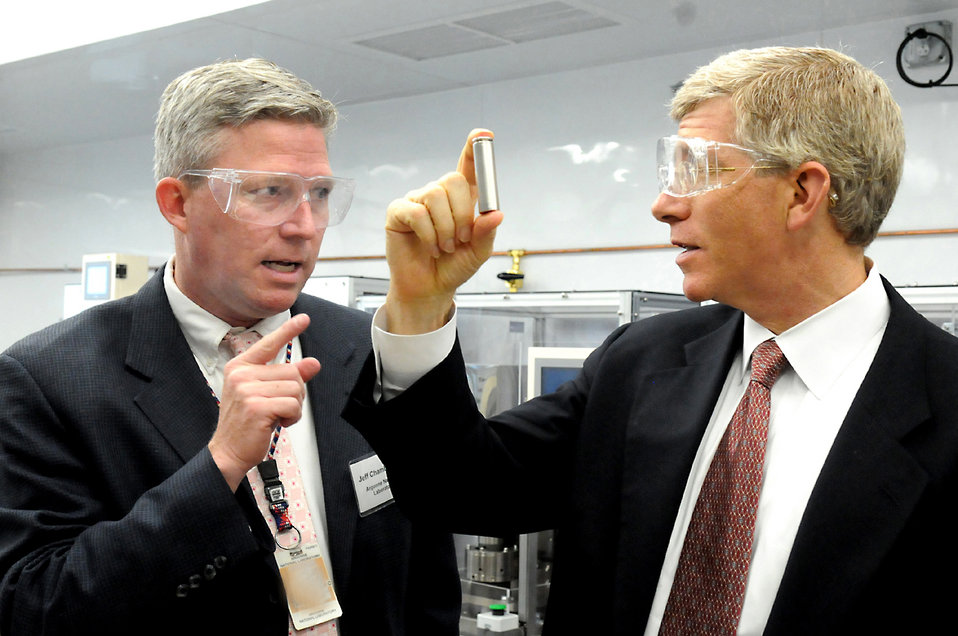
DEPUTY SECRETARY PONEMAN CHECKS OUT A BATTERY PROTOTYPE AT ARGONNE NATIONAL LABORATORY.

Argonne's Jeff Chamberlain speaks with the Deputy Secretary on their robust energy storage program.